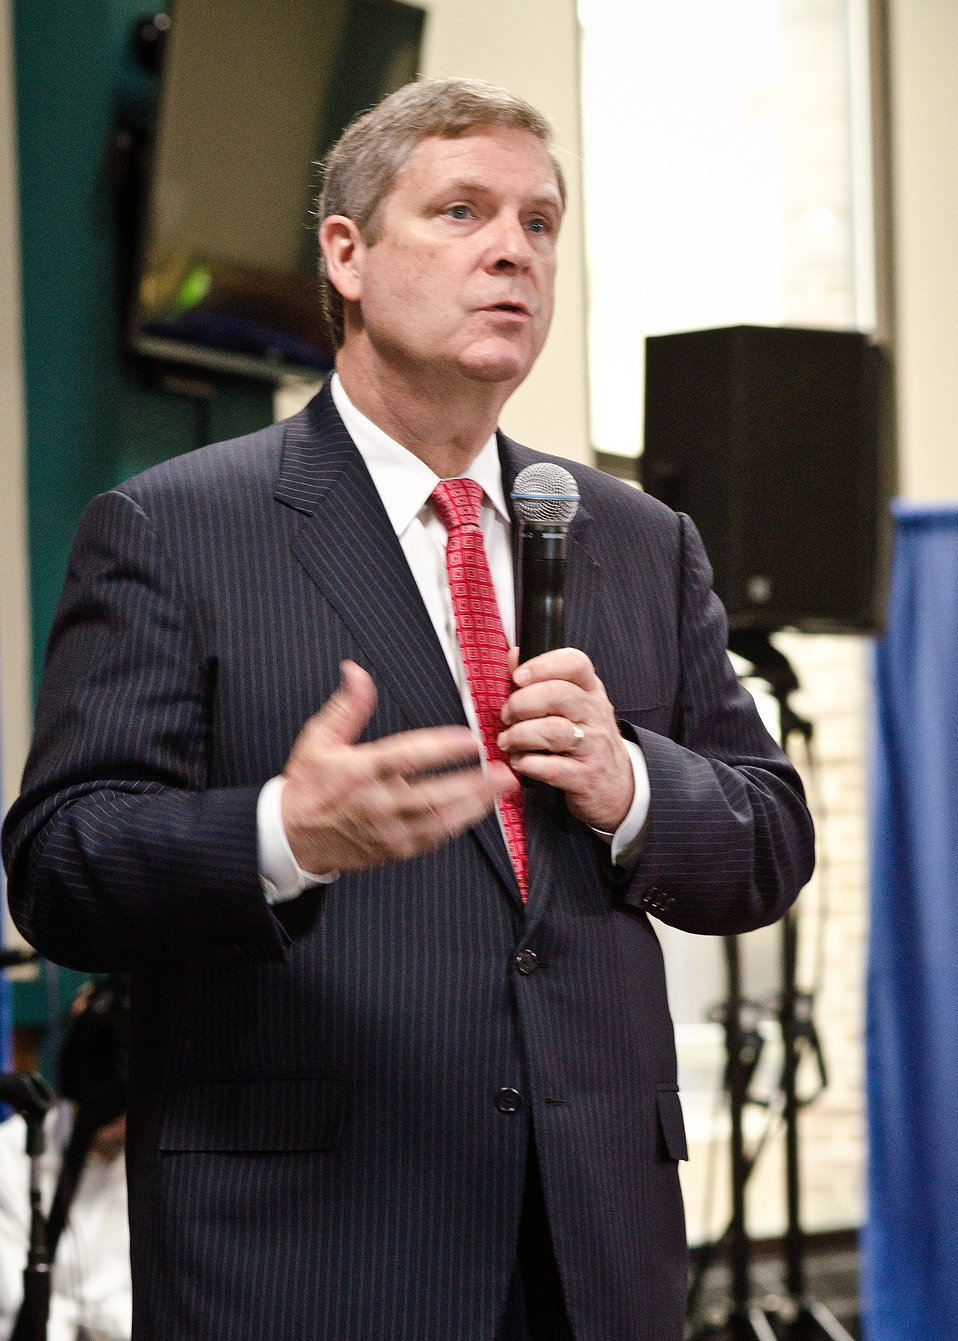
Agriculture Secretary Tom Vilsack offered U.S. Department of Agriculture (USDA) employees the opportunity to ask questions about the Blueprint for Stronger Service Initiative and hear directly from the Secretary Vilsack during the Ask The Secretary event held in the South Building Cafeteria, in Washington, D.C., on Wednesday, March 21, 2012, The Blueprint for Stronger Service Initiative aims to build a modern and efficient service organization that is closely timed with technological innovations - and better suited to respond to 21st century agricultural challenges.